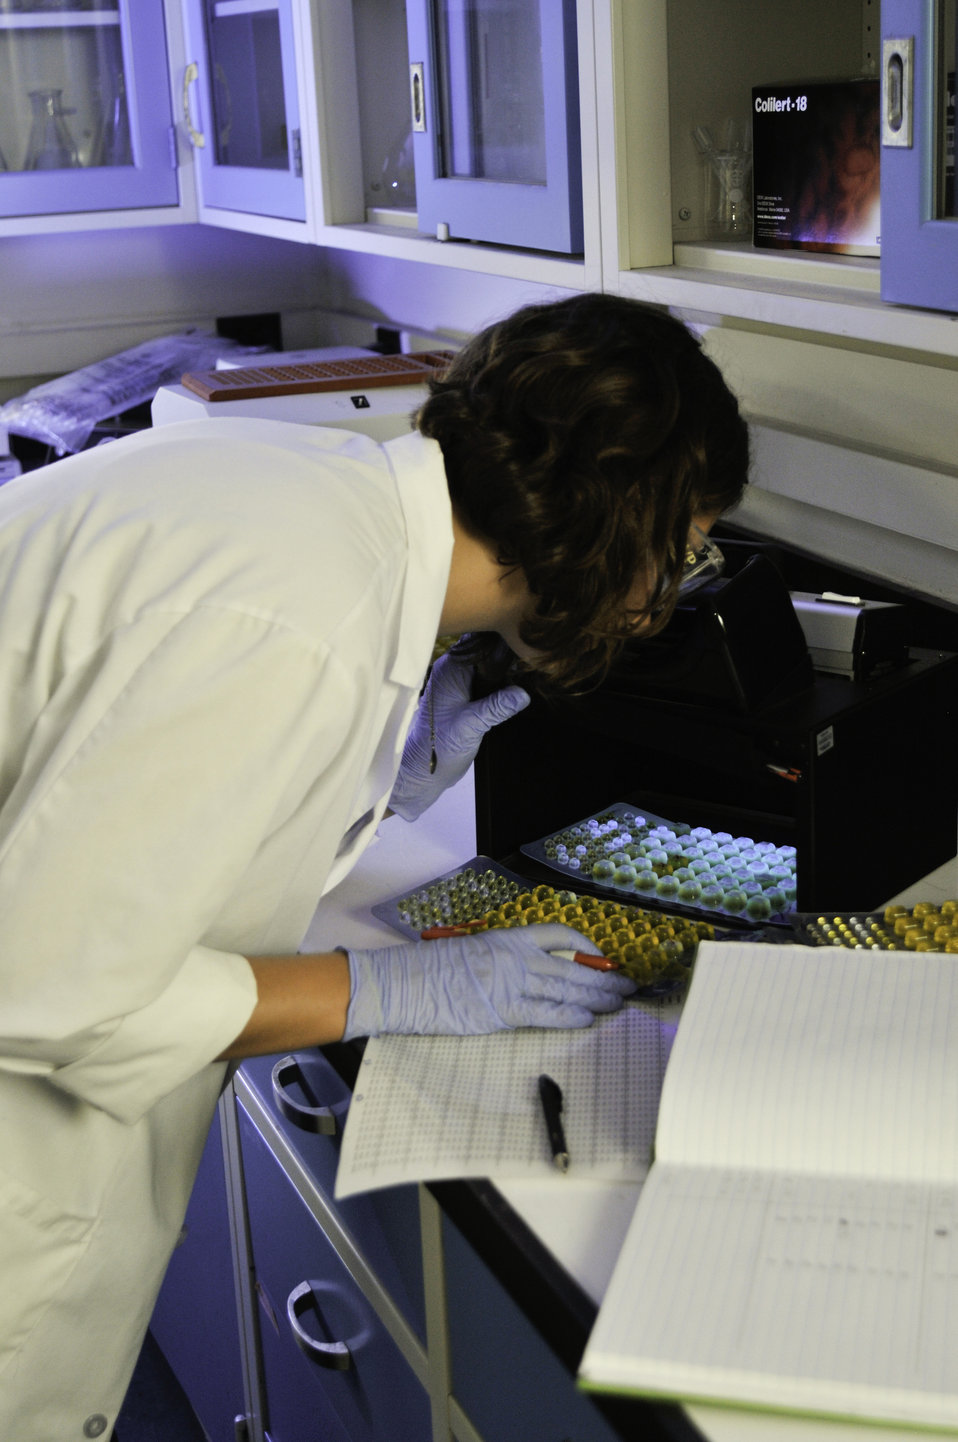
University of Maryland, Environmental Science and Policy major and intern in the Environmental Microbial and Food Safety Laboratory, at U.S. Department of Agriculture's (USDA) Agricultural Research Service (ARS), Beltsville Agricultural Research Center, in Beltsville, Maryland monitors the E. coli count in a variety of different environmental media including creek water, agricultural run-off, pond sediment, manure, etc. using colilert-18 on July 29, 2010.